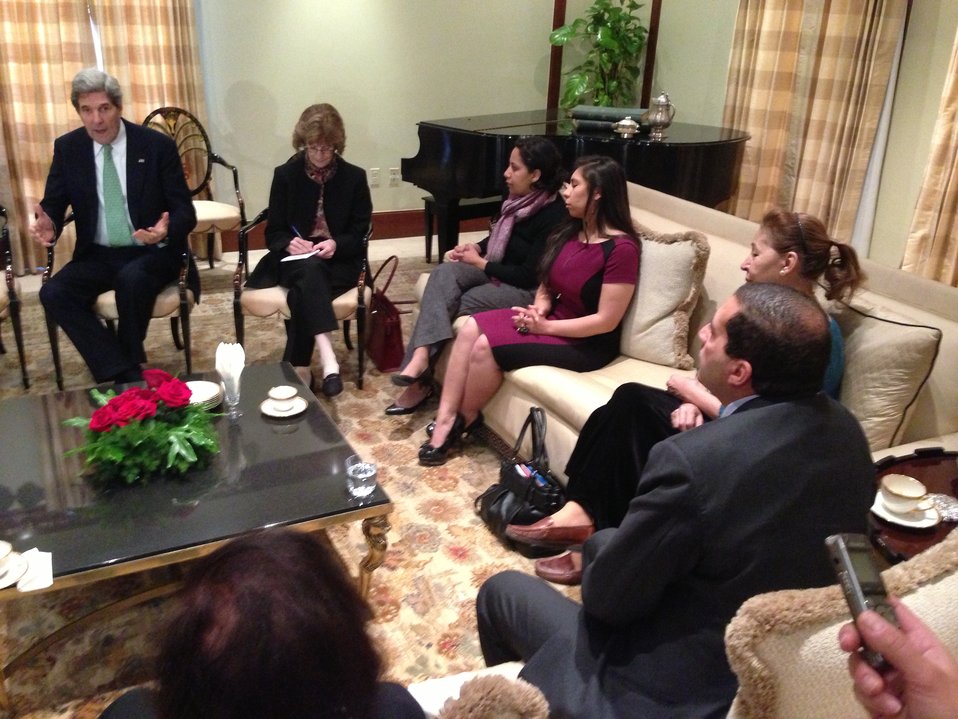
Secretary Kerry Meets With Civil Society Leaders in Egypt

U.S. Secretary of State John Kerry meets with civil society leaders in Cairo, Egypt, on March 3, 2013.